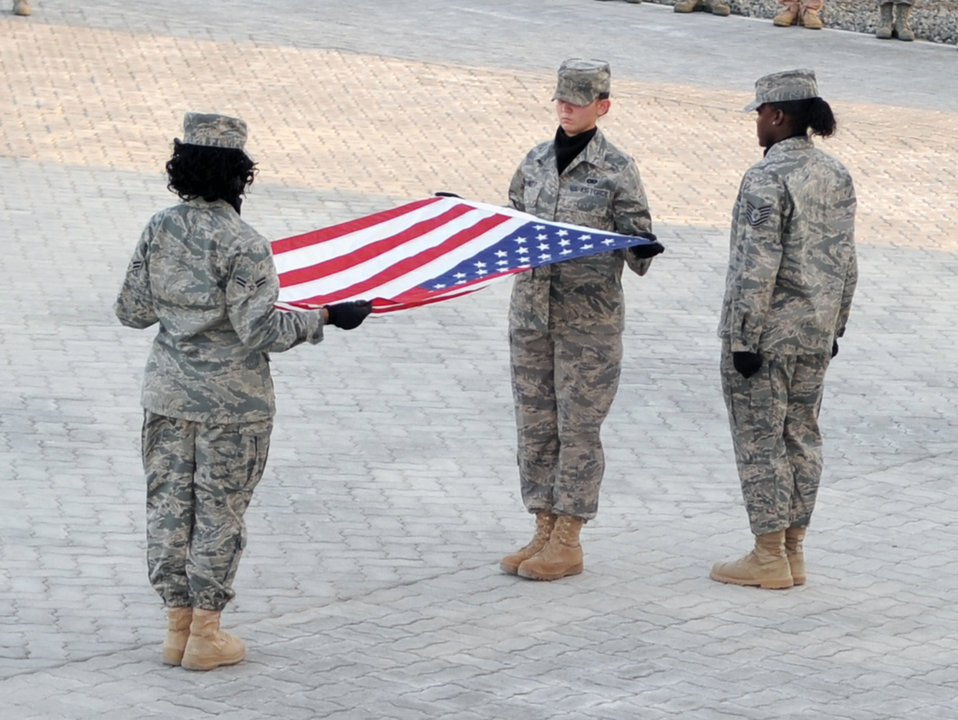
Women's History Month

Airman 1st Class Teleasha Riley (from left), 380th Expeditionary Communications Squadron; Airman Lyndee Bennett, 380th Expeditionary Security Forces Squadron; and Tech. Sgt. Camille Horton, 380th Expeditionary Medical Group, retire the flag March 19, 2010, during an all-female 380th Air Expeditionary Wing Women's History Month retreat ceremony at an air base in Southwest Asia. The formation honored women who serve in the military, past and present.